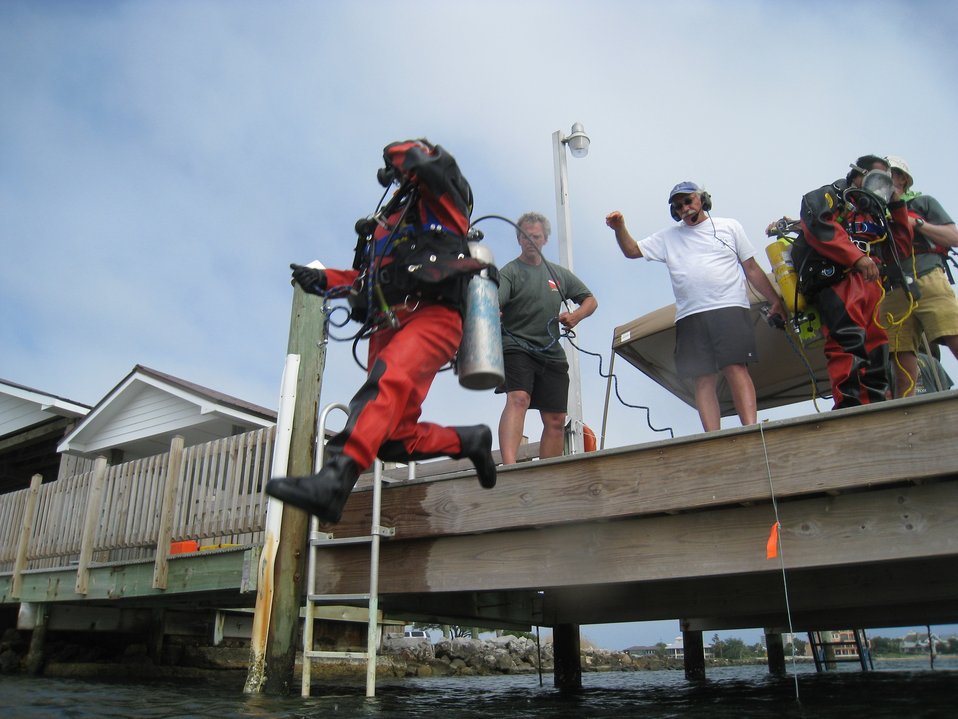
May 2012, Diving blind with a 'blackout mask'

At this dive training in Gulf Breeze, Florida, divers learn basics of safety and rescue, as well as practice projects using the scientific method underwater in various diving modes including SCUBA, tethered SCUBA, and surface supplied air.